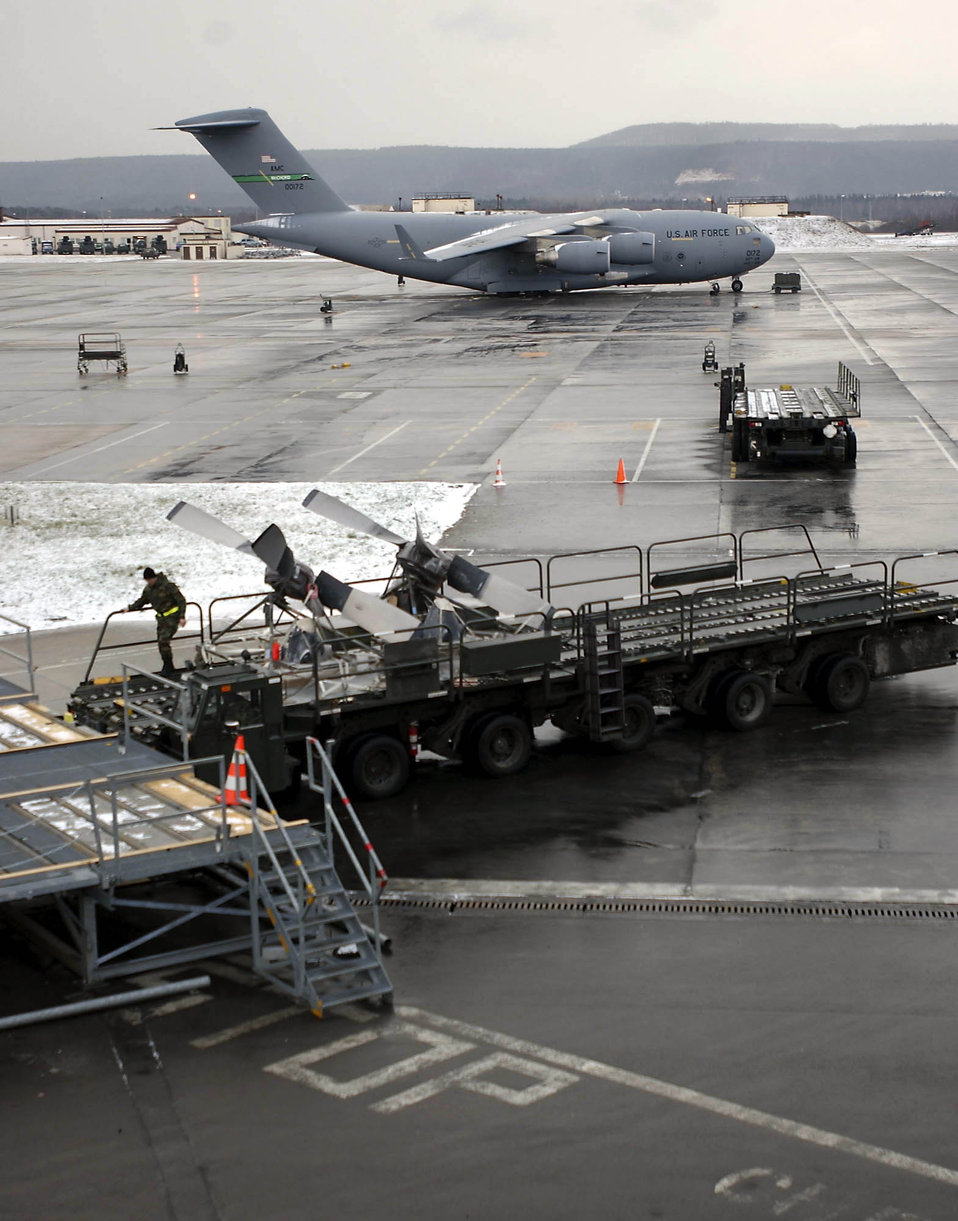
On the Ramp

RAMSTEIN AIR BASE, Germany -- Aerial port airmen load C-130 Hercules propellers onto a 60-k loader at Ramstein Air Base, Germany. The airmen uploaded the props onto an awaiting C-17 Globemaster III, which then airlifted the cargo to a base in the Middle East. The base's loading ramp, the domain of the 723rd Air Mobility Squadron, has seen a 60-percent increase in aircraft during the past year.